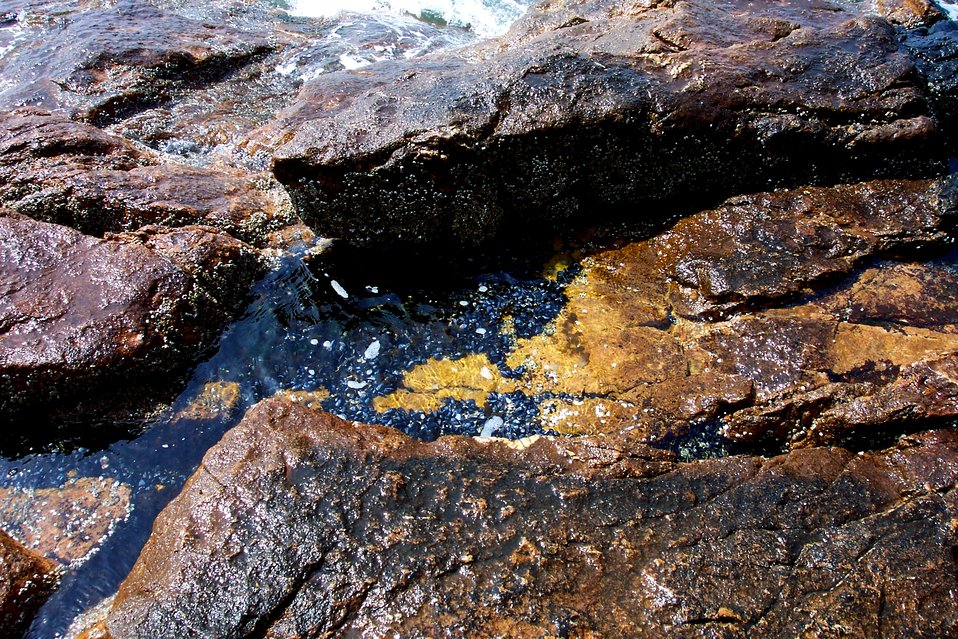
Tide pool with mussels below Bass Harbor Head Lighthouse.